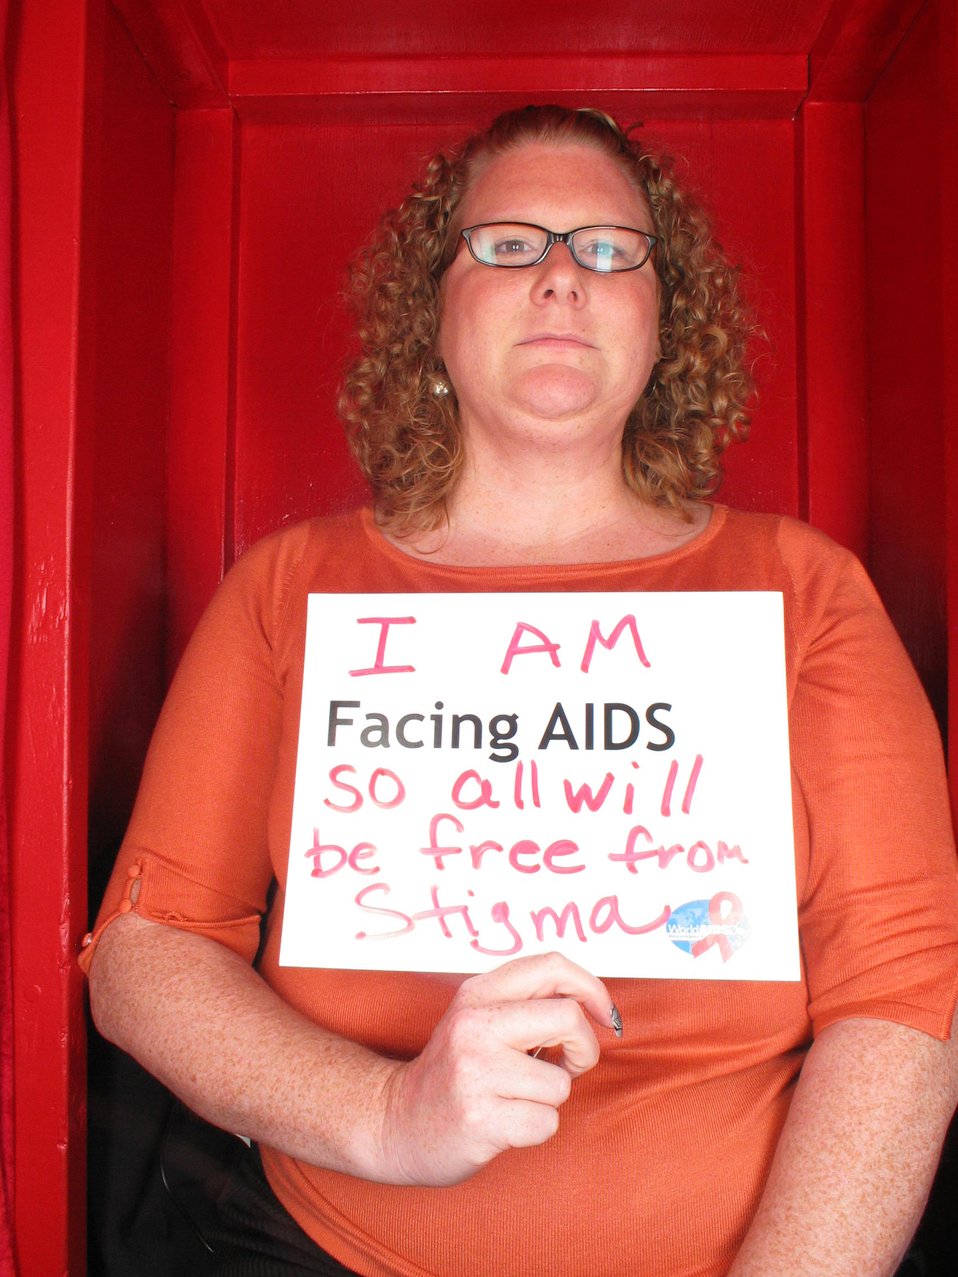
I am Facing AIDS so all will be free from stigma.